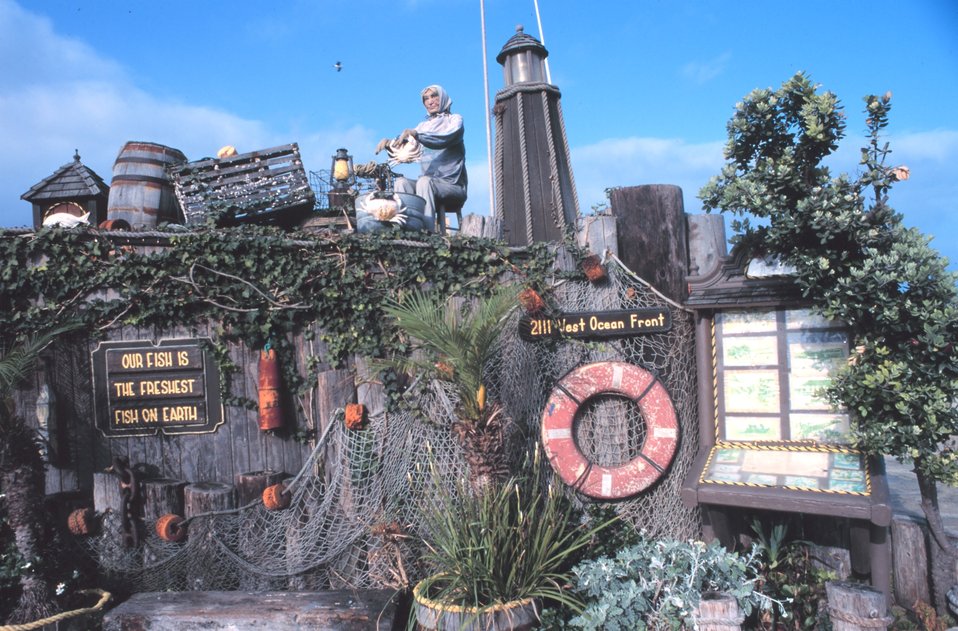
Views of the Dory Fleet Market